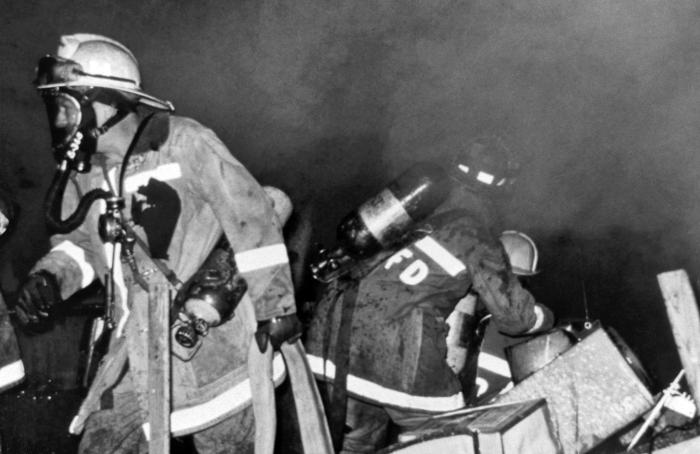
Here, firefighters were shown battling a blaze that was sparked days after hurricane Hugo made landfall north of Charleston, South Carolina in 1989.